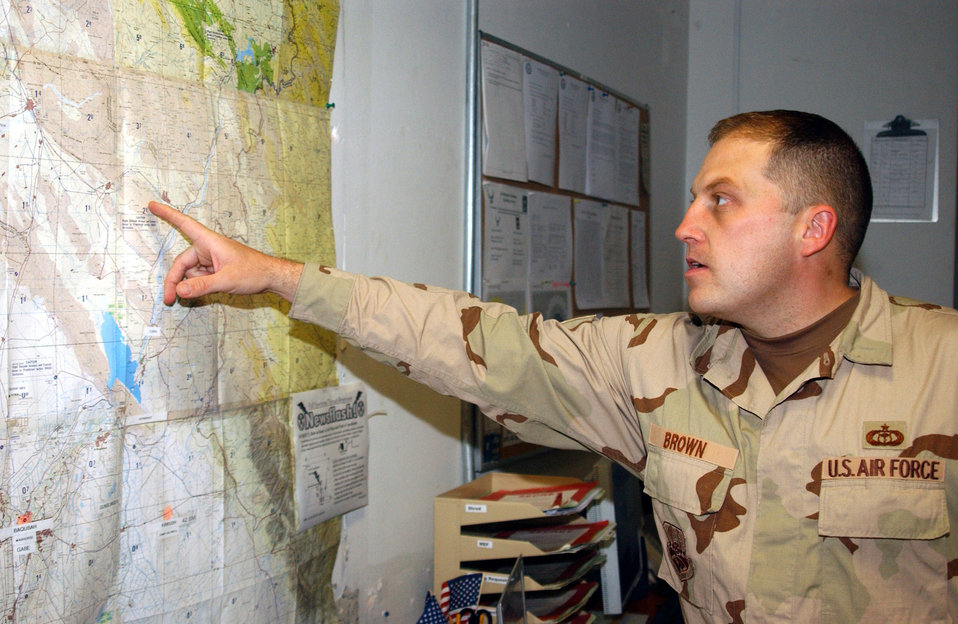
Balad combat weather flight ensures safe travel

Staff Sgt. James Brown looks at a map for guidance Oct. 16 at Balad Air Base, Iraq. Sergeant Brown is a combat weather forecaster assigned to the 332nd Expeditionary Operations Support Squadron and is deployed from Hill Air Force Base, Utah.